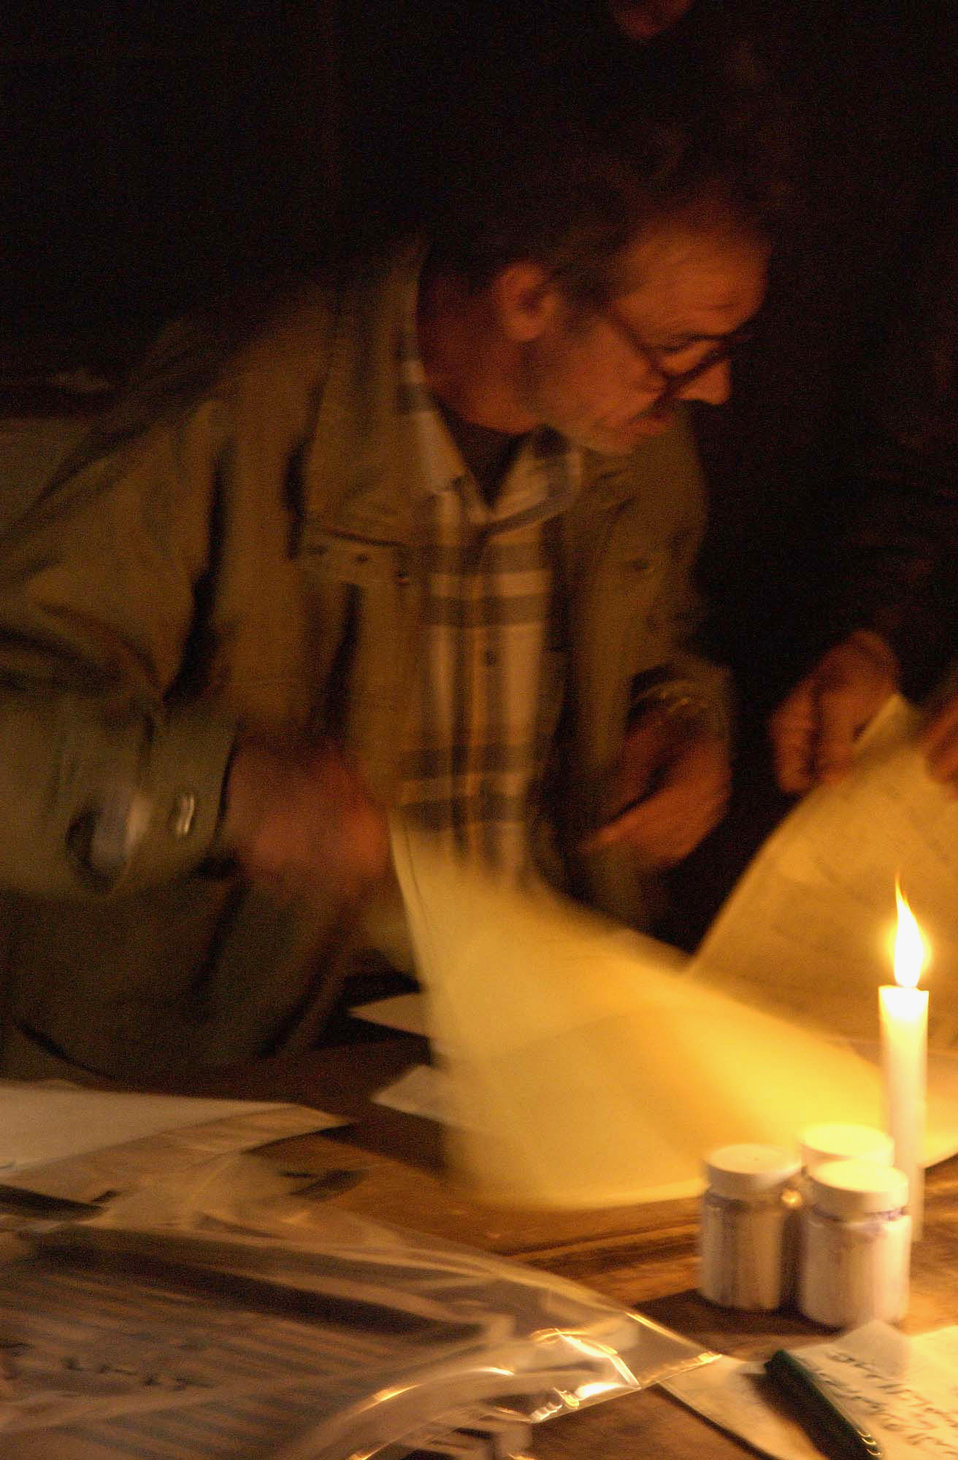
A new beginning...

BALAD, Iraq -- An Iraqi polling center worker here gathers up ballots cast at his location so they can be taken to be counted Jan. 30. Millions of Iraqis throughout the country participated in Iraq's first free election in more than 50 years.